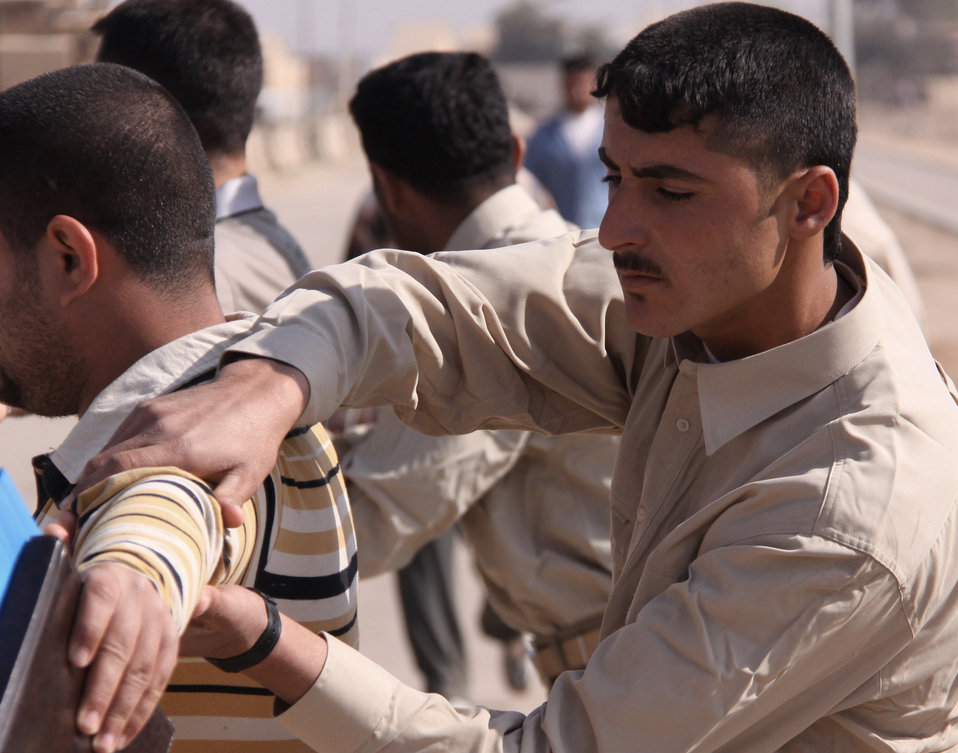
Iraqis provide new line of security for Joint Base Balad

A Iraqi screener searches a local national before entering the base perimeter at Joint Base Balad, Iraq, April 1, the first day a new security initiative took effect at JBB. More than 100 Iraqis from the surrounding area now serve as vehicle and pedestrian screeners around the perimeter of JBB to reduce the base risk of improvised explosive devices attacks against JBB.